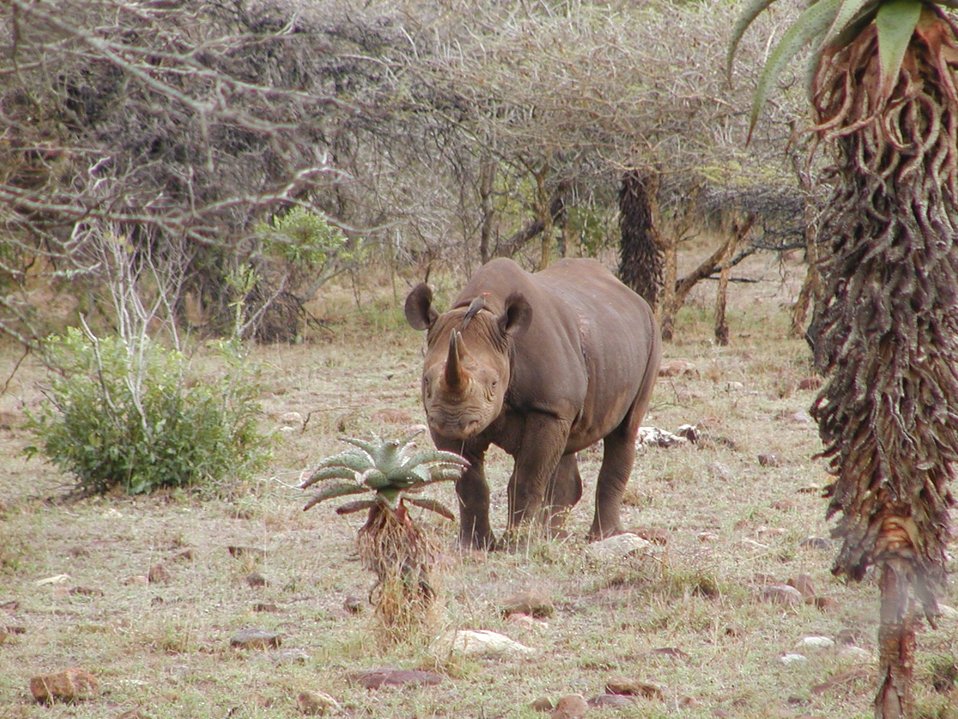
Black rhino

Mkhuze, South Africa